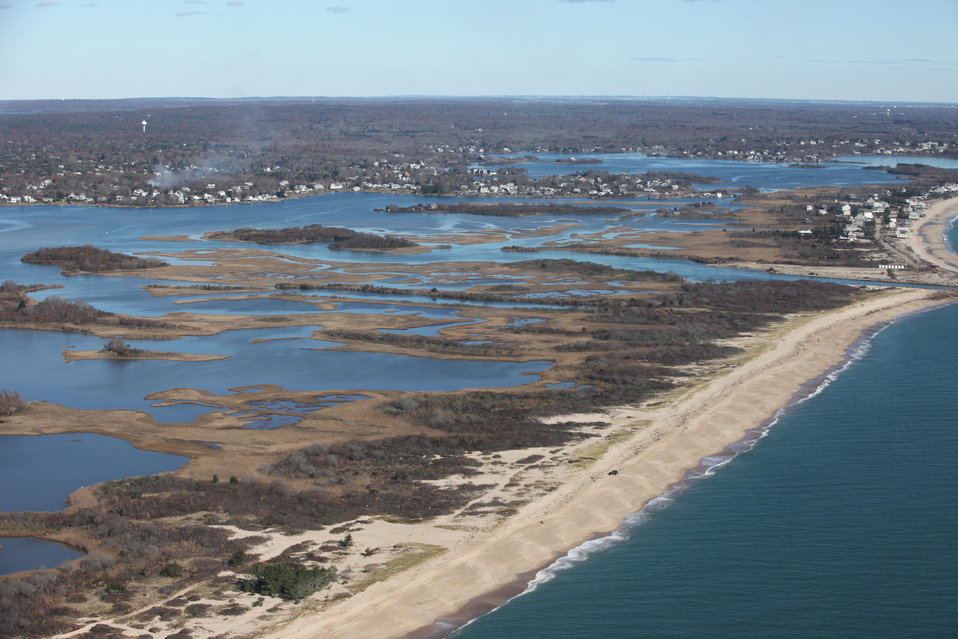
Aerial view of Ninigret National Wildlife Refuge.